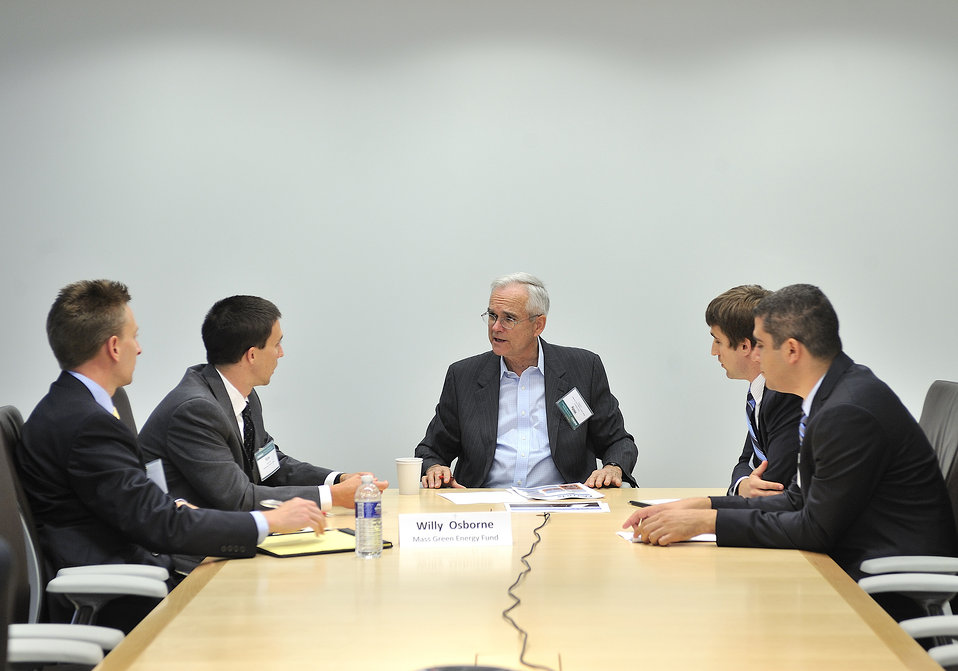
National Clean Energy Business Plan Competition

The National Clean Energy Business Plan Competition inspired nearly 300 university teams across the country to create new businesses to commercialize promising energy technologies developed at U.S. universities and the National Laboratories.